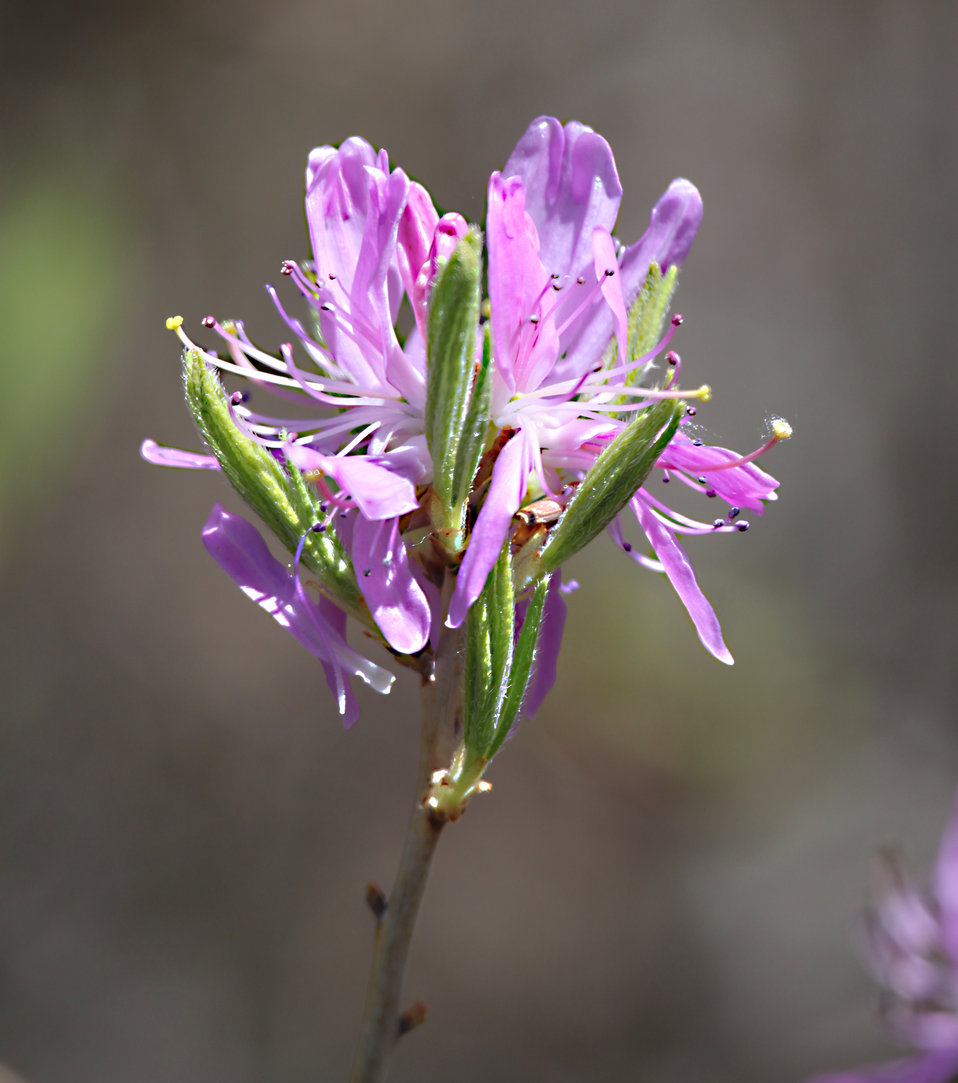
Rhodora in bloom

Rhodora-Missisquoi NWR
Photo Credit: Ken Sturm; USFWS